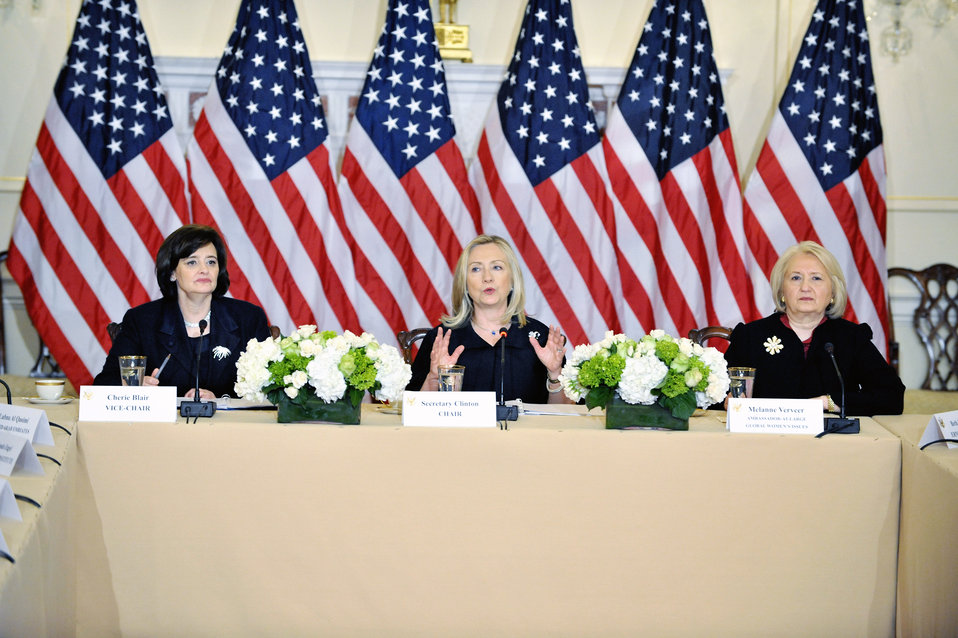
Secretary Clinton Hosts Inaugural Meeting of International Council on Women's Business Leadership

U.S. Secretary of State Hillary Rodham Clinton hosts the inaugural meeting of the International Council on Women's Business Leadership at the U.S. Department of State in Washington, D.C., on January 24, 2012. Also pictured in the photo are Cherie Booth Blair and Ambassador-at-Large for Global Women's Issues Melanne Verveer.